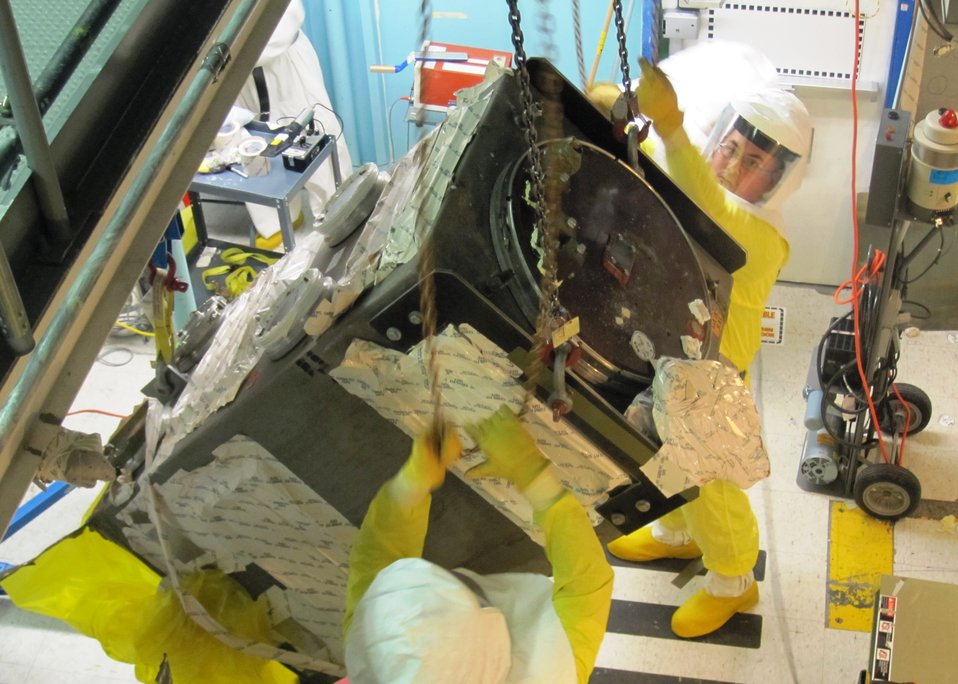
Recovery Act Funds Accelerate Cleanup, Reduce Footprint at Hanford Site

A section of a glove box is hoisted for removal from Hanford’s Plutonium Finishing Plant. Glove boxes are large, contaminated pieces of equipment that once supported plutonium production and processing.